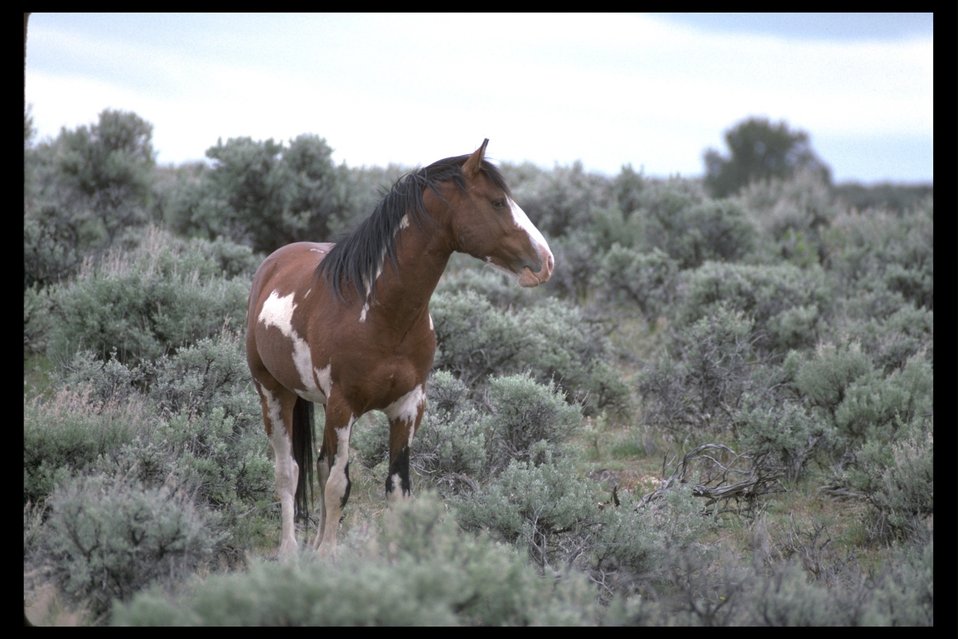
A Pinto Stallion in the South Steens HMA.